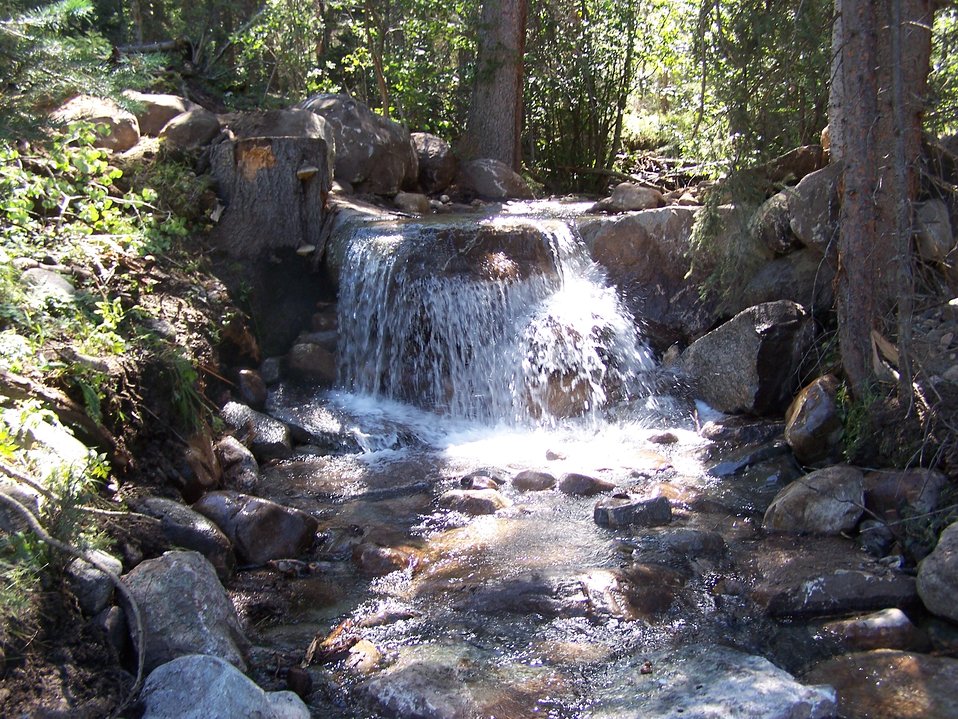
Fish Barrier

PFW staff helped install this fish barrier to protect genetically pure strain of native cutthroat trout.